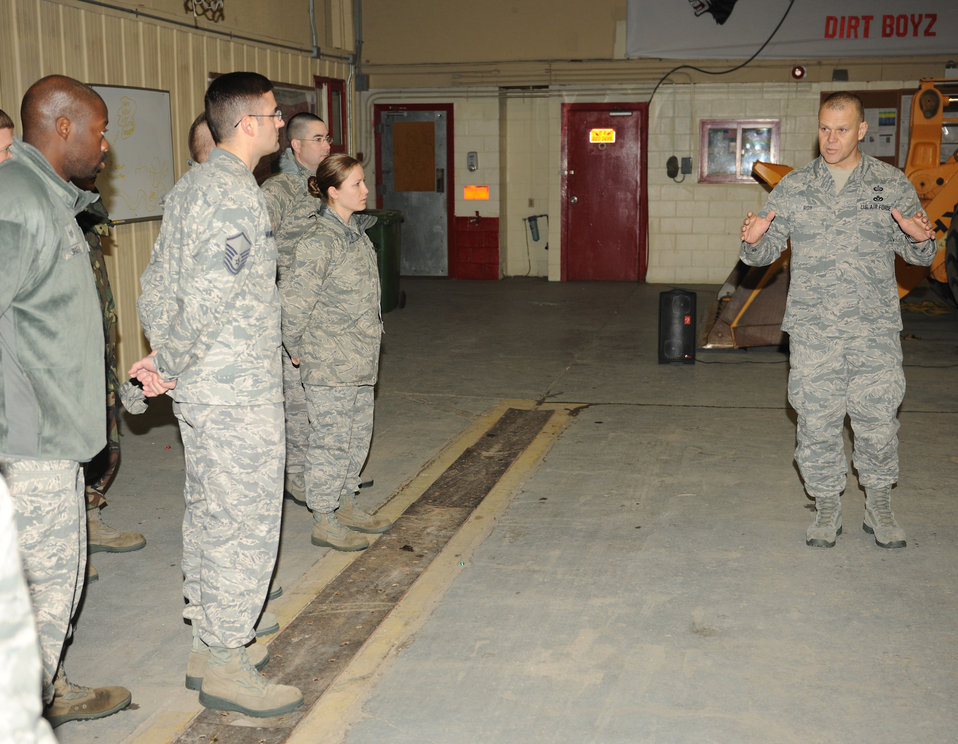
Chief Roy visits Kunsan

Chief Master Sgt. of the Air Force James A. Roy speaks to Airmen from the 8th Civil Engineer Squadron Dec. 30, 2010, during his visit to Kunsan Air Base, South Korea. Chief Roy and his wife, Paula, visited the Kunsan AB Dec. 29 and 30, during their year-end tour of Pacific Air Forces bases.